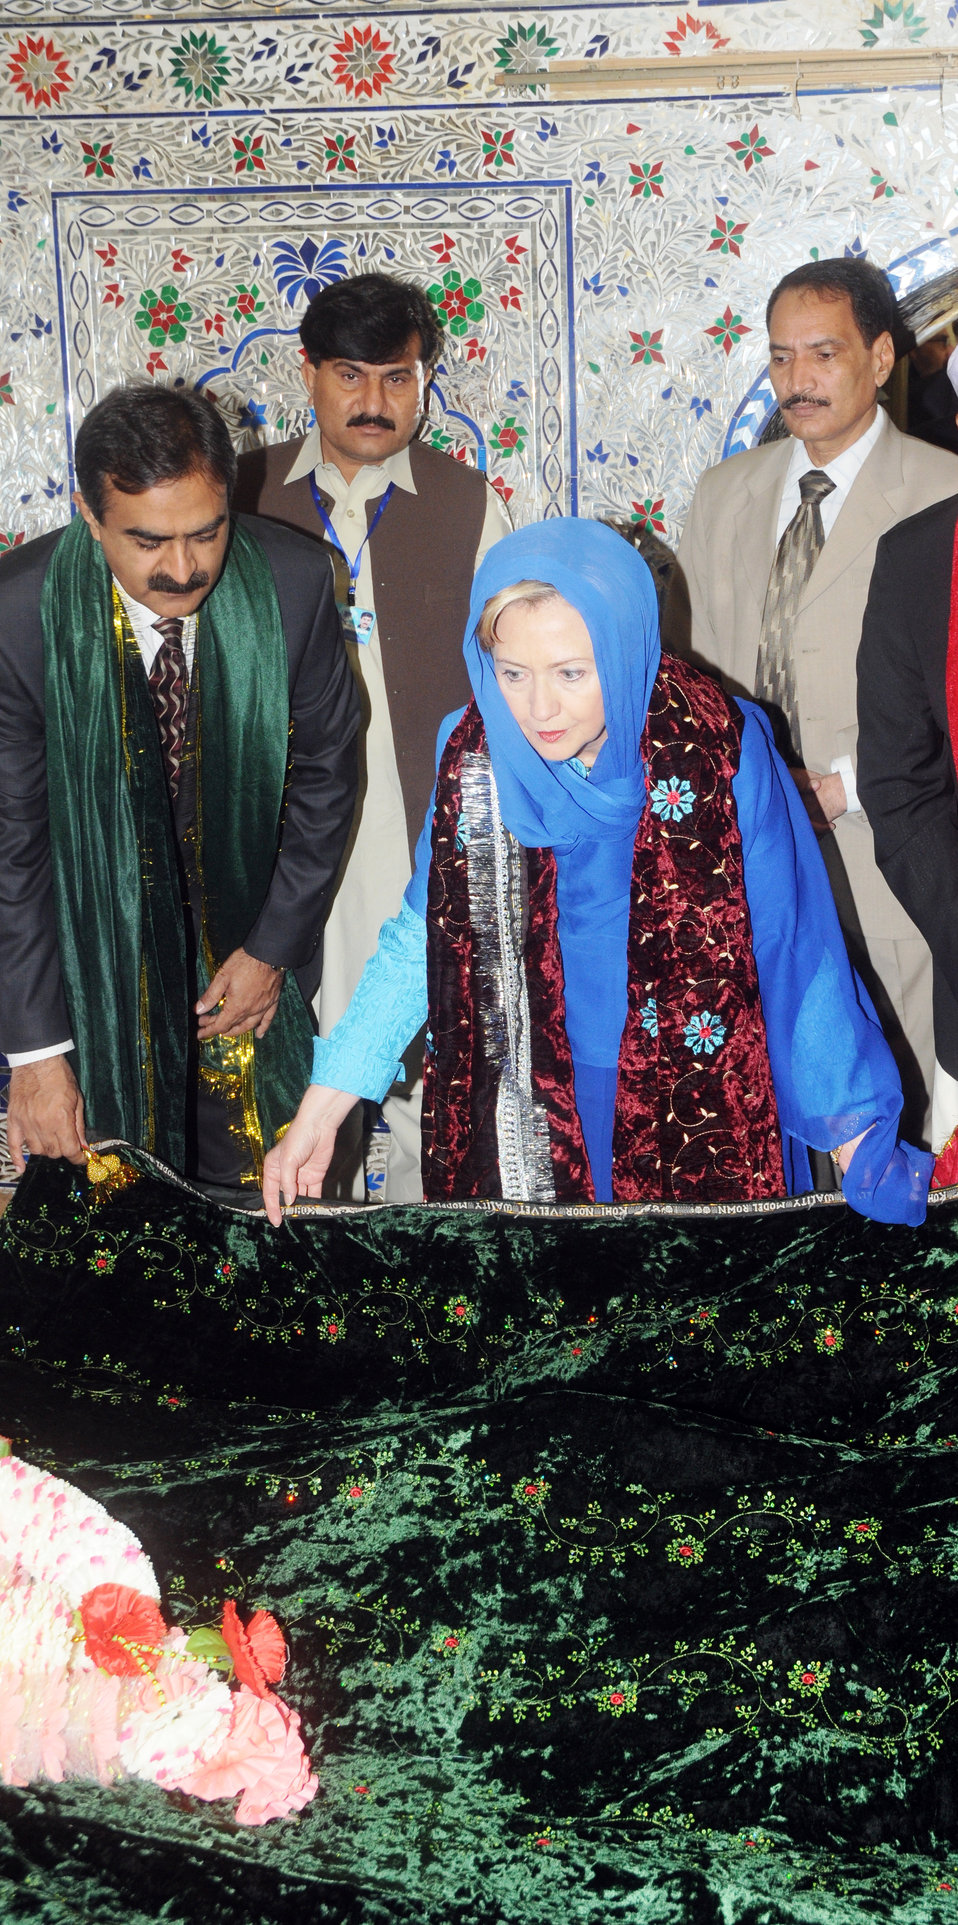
Secretary Clinton Visits Shrine of Shah Abdul Latif Kazmi

U.S. Secretary of State Hillary Rodham Clinton lays a wreath at the tomb of 17th century Sufi Saint Shah Abdul Latif Kazmi, Bari Imam, near Islamabad, Pakistan October 28, 2009.